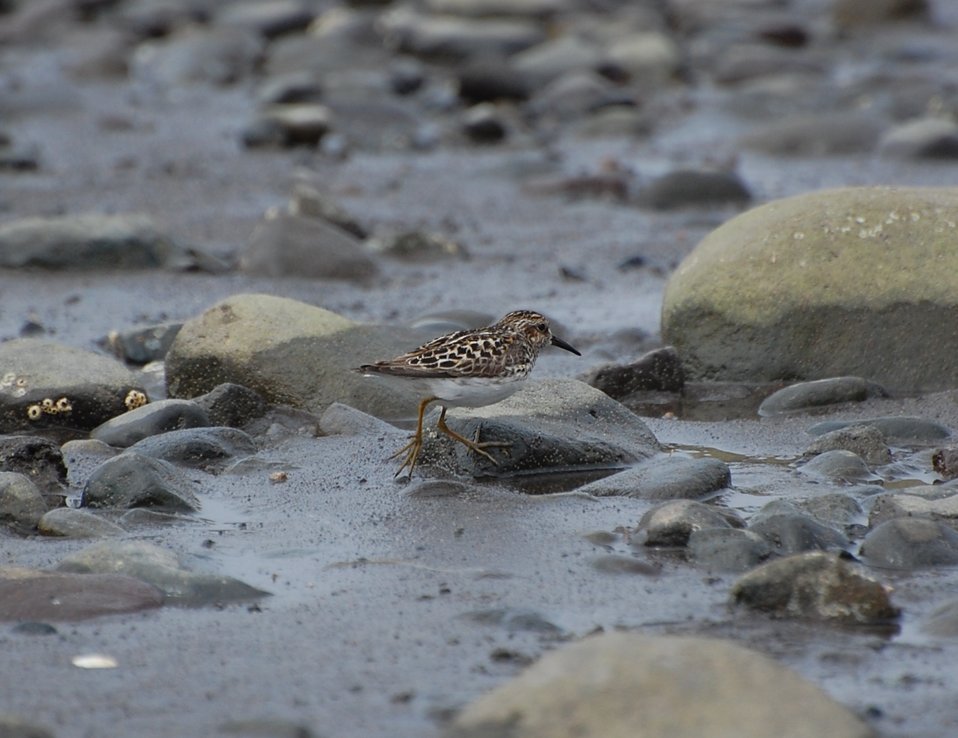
Least Sandpiper

Kinzarof Lagoon, Izembek National Wildlife Refuge
Photo by Kristine Sowl,
USFWS, Public Domain